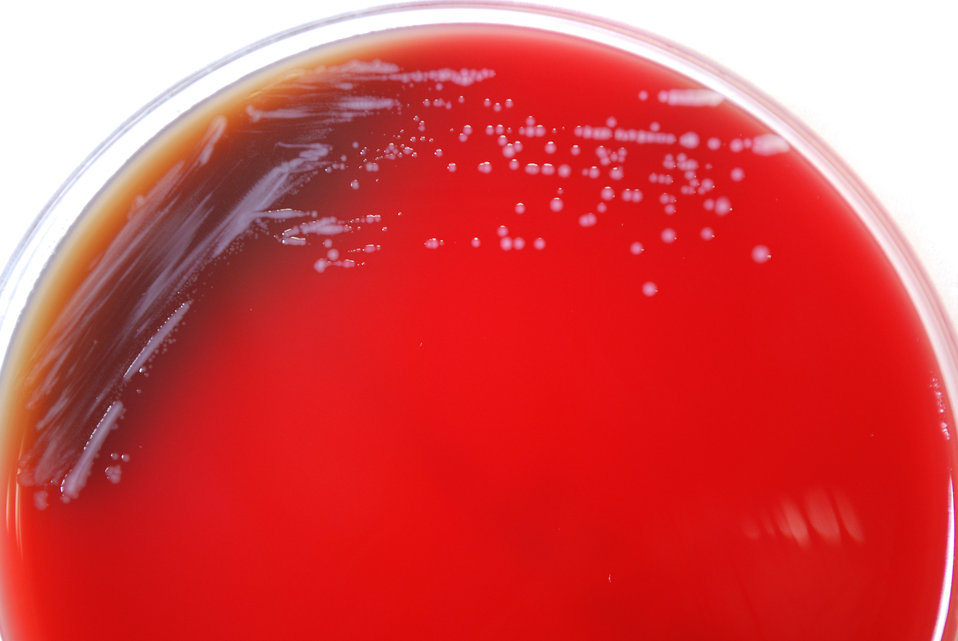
As a closer view of PHIL 12237, this photograph depicts the colonial morphology displayed by Gram-negative Burkholderia mallei bacteria, which was grown on a medium of sheep's blood agar (SBA), for a 48 hour time period, at a temperature of 37�C.